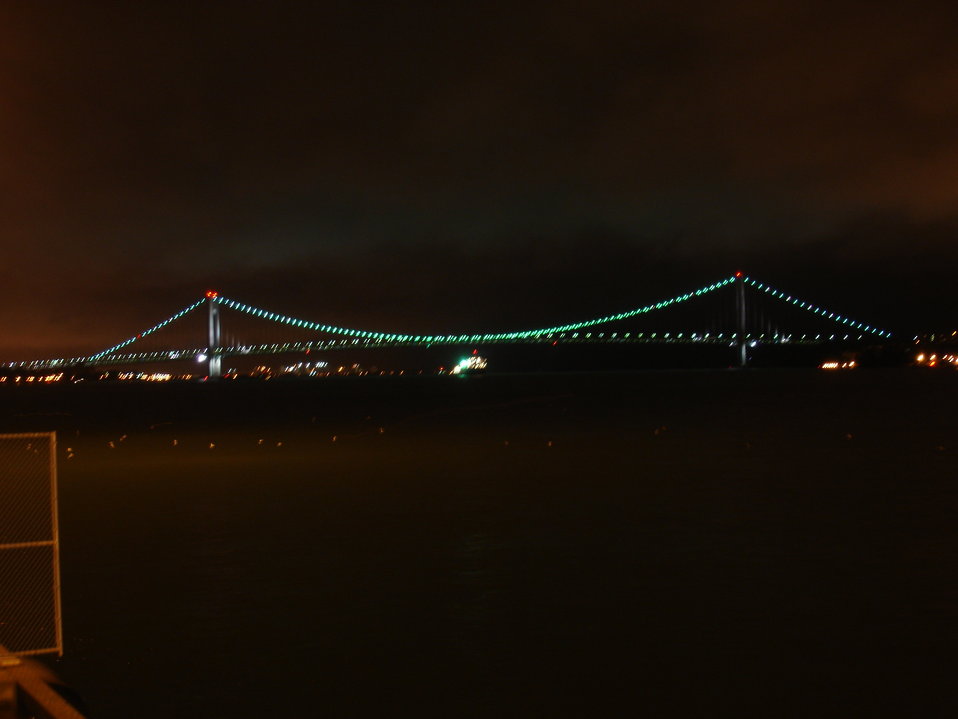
The Verrazano-Narrows Bridge at night.